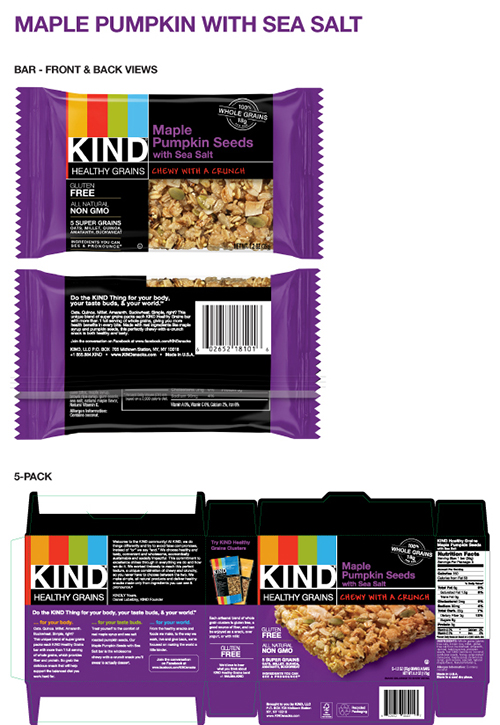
RECALLED – Bars

May 21, 2014 – Product Recall – Kind Healthy Snacks Issues Allergy Alert Due to Potential Presence of Peanut Protein in Strong & Kind Bars and Kind Healthy Grains Maple Pumpkin Seeds Bars.